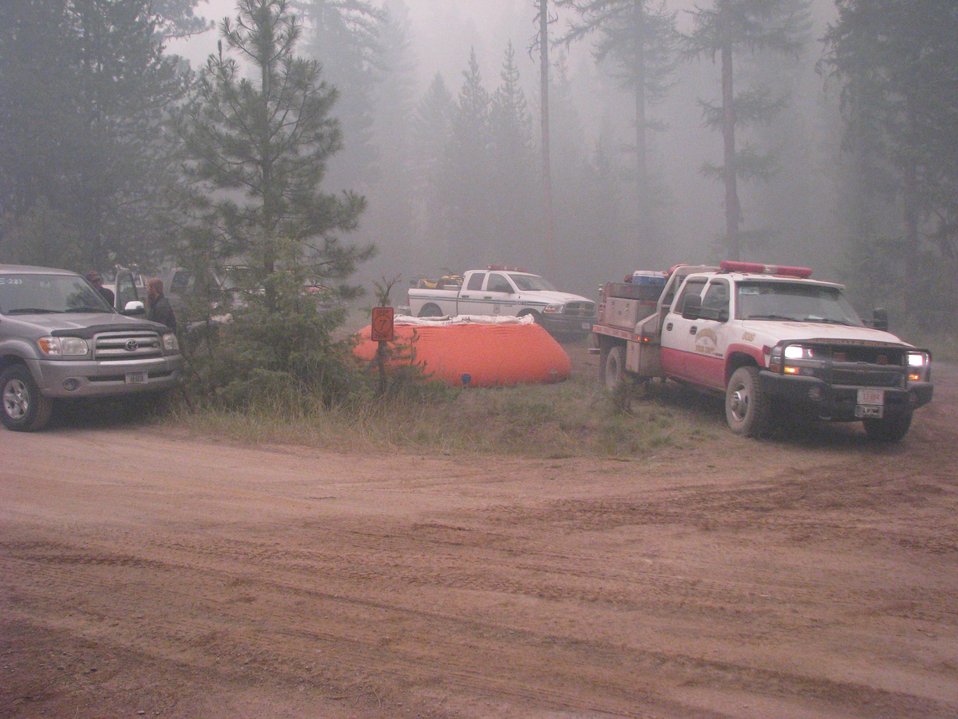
Drop Point 7 in Keystone Gulch in the Lolo National Forest, MT. This drop point provides fire support against the West Mullan Fire in the Lolo National Forest, MT. The West Mullan Fire in the Lolo National Forest in Montana near Superior, MT began on Jul. 14, 2013 was due to human interference and has consumed approximately 6, 090 acres. The West Mullan Fire is approximately 45% contained.